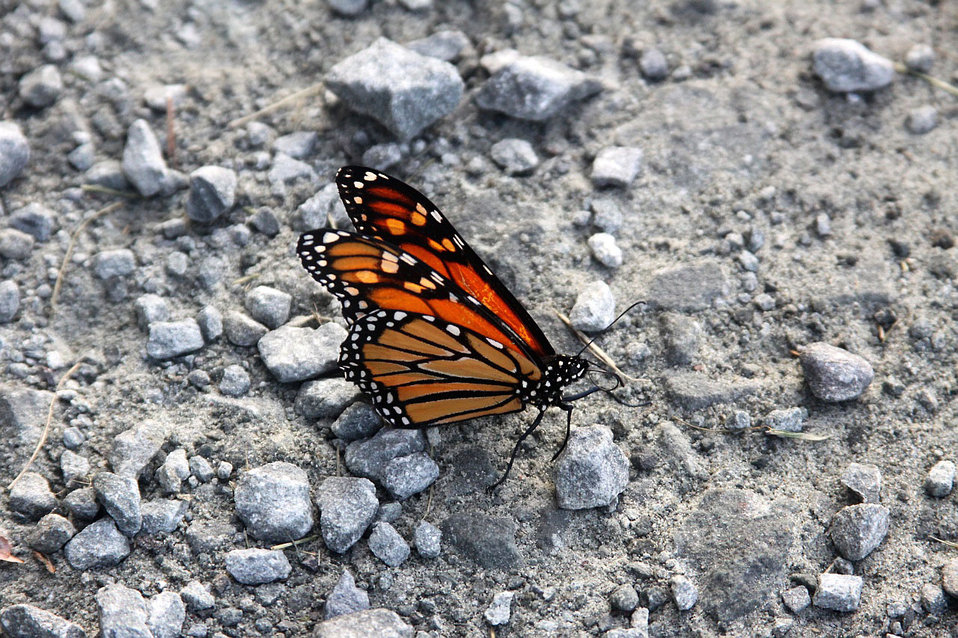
Butterfly

Macro picture of butterfly.